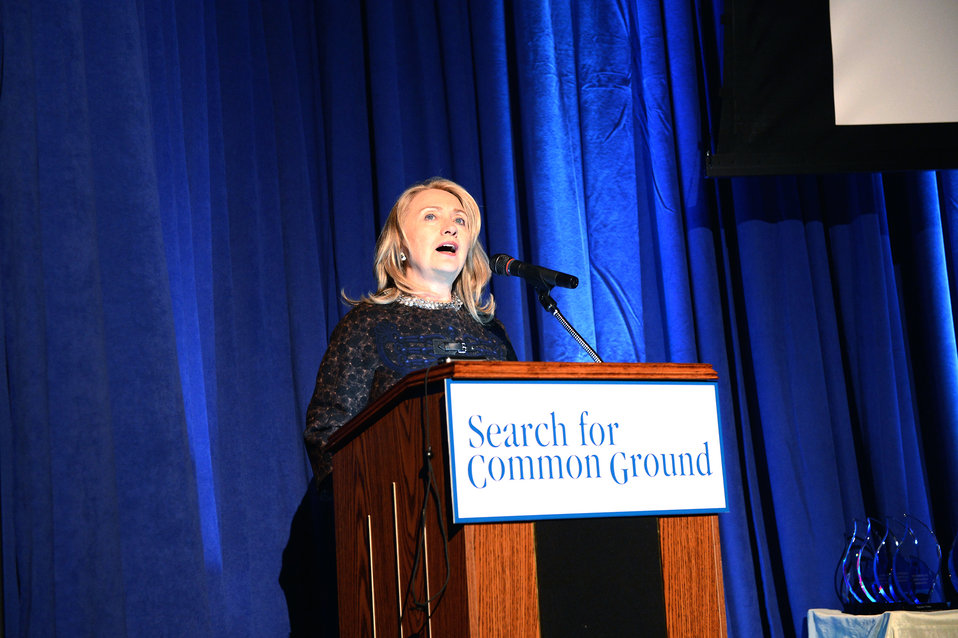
Secretary Clinton Delivers Remarks in Honor of the Late Ambassador Chris Stevens

U.S. Secretary of State Hillary Rodham Clinton delivers remarks at a Search for Common Ground Dinner Reward Ceremony in honor of the late Ambassador Chris Stevens in Washington, D.C. on November 8, 2012.